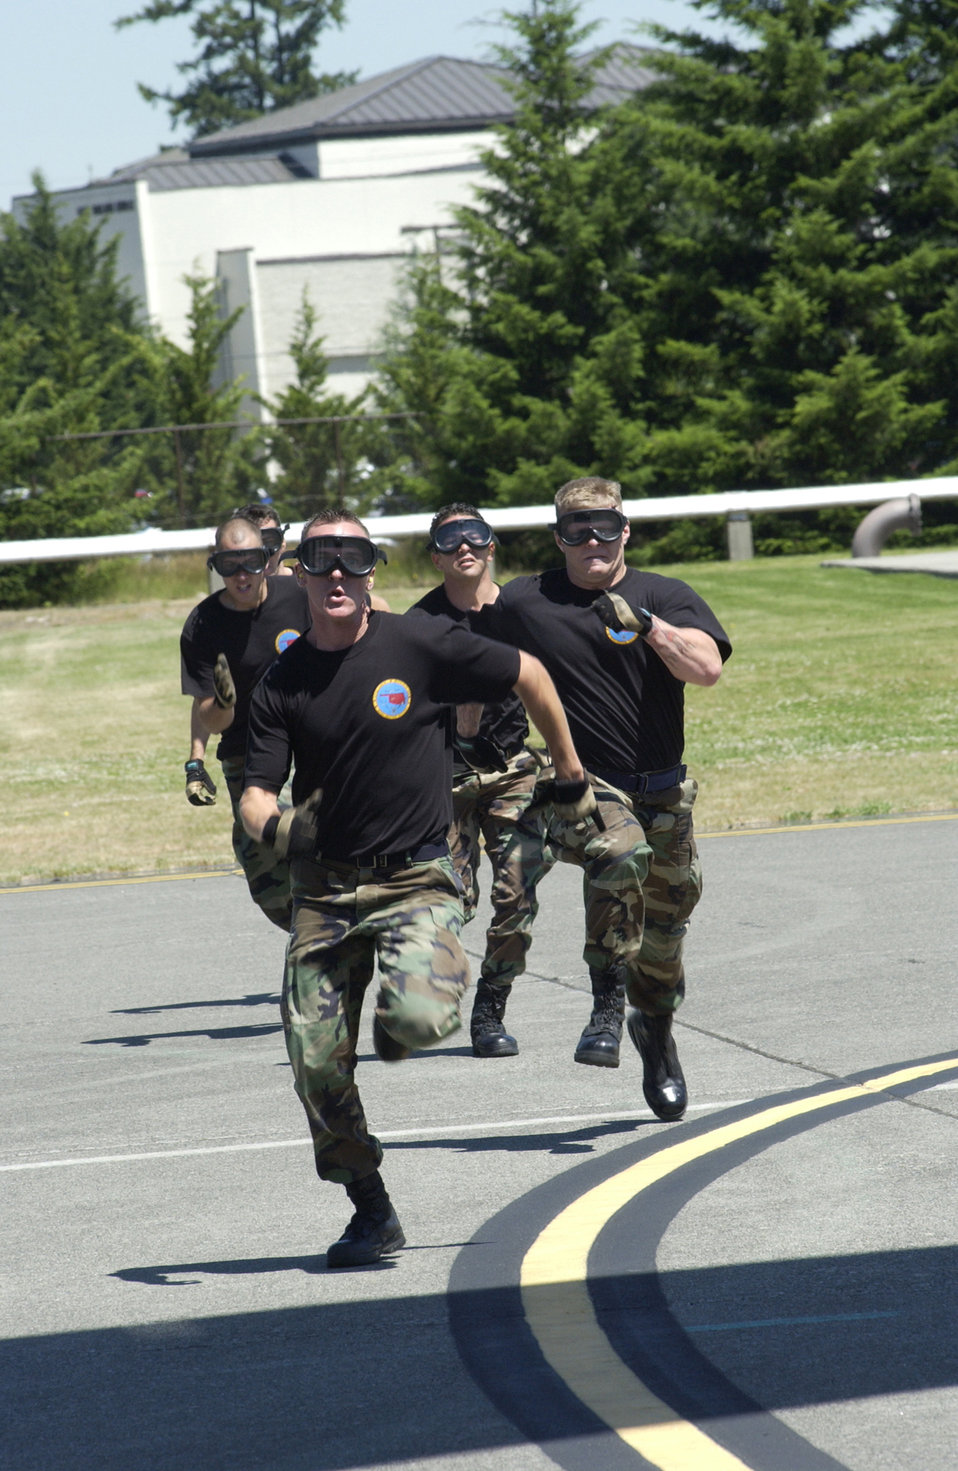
Racing at Rodeo

MCCHORD AIR FORCE BASE, Wash. -- Airmen from Altus Air Force Base, Okla., run to a C-17 Globemaster III to unload equipment during Rodeo 2005. The Air Mobility Command competition focuses on improving the command's core abilities.